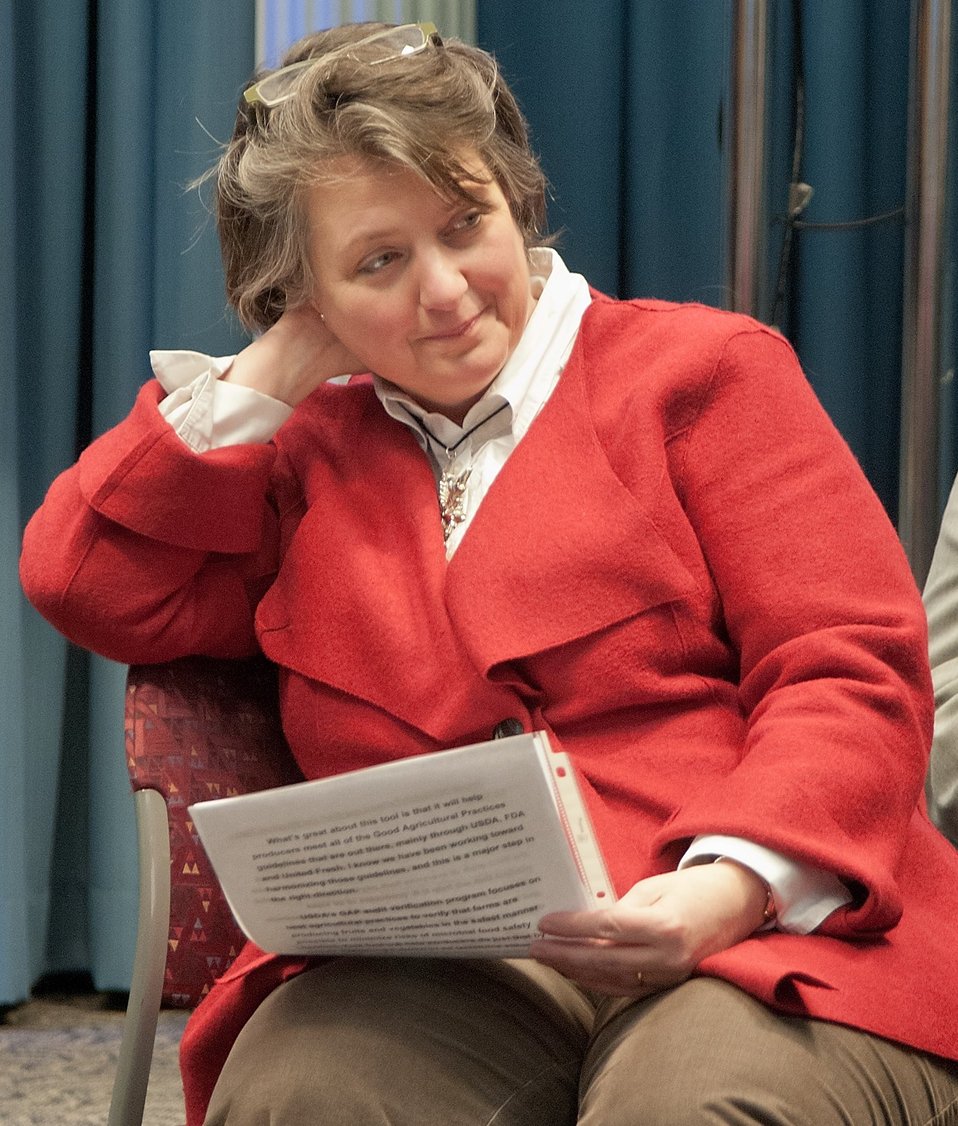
Agriculture Deputy Secretary Dr. Kathleen Merrigan listens to questions posed by audience members about the On-Farm Food Safety Project Tool. Deputy Secretary Merrigan and leaders from agriculture and food organizations introduced the free online tool to assist U.S. producers of all sizes achieve Good Agricultural Practices (GAP), helping to further expand economic opportunities for American agriculture at the United States Department of Agriculture in Washington, D.C., on Thursday, December 15, 2011. USDA’s GAP audit verification program focuses on best agricultural practices to verify that farms are producing, and packers are handling and storing, fruits and vegetables in the safest manner to minimize food safety hazards. The online tool, part of FamilyFarmed.org’s On-Farm Food Safety Project, is the first of its kind and was developed by a broad coalition of farm and produce industry partners with lead funding from the USDA Risk Management Agency. It is available at www.onfarmfoodsafety.org.